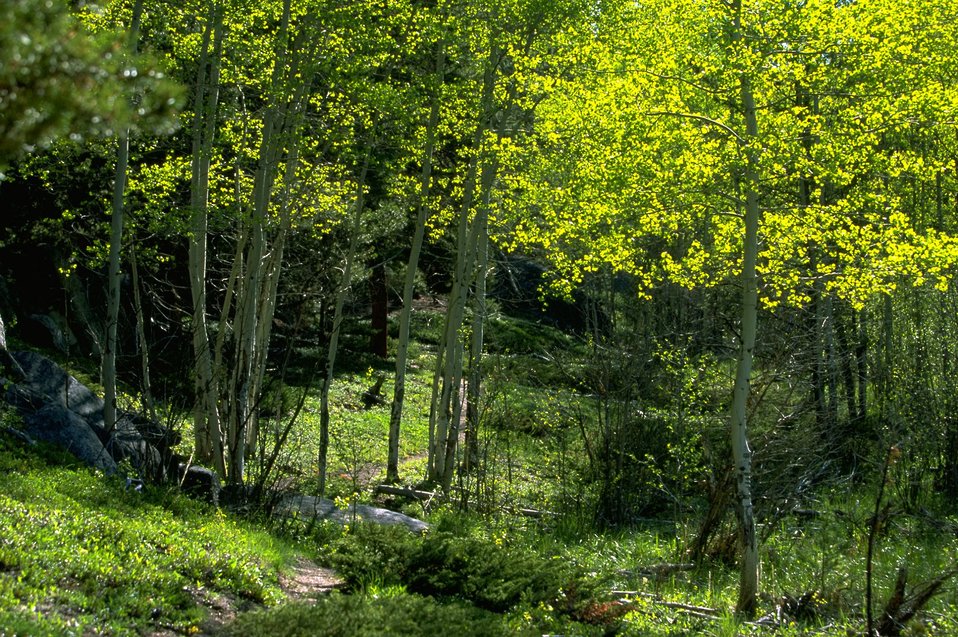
A grove of Aspen trees